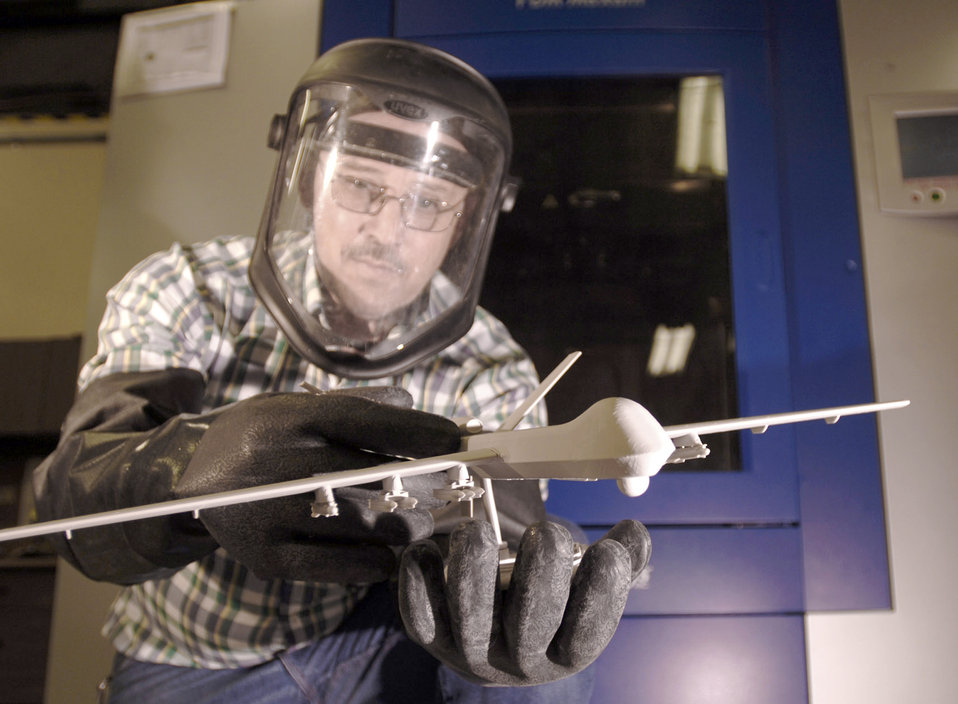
PECI

Bud Schmidt holds a model of an unmanned aerial vehicle created by the Fused Deposition Modeler at Sheppard Air Force Base, Texas, July 19, 2008. The FDM was used in conjunction with 3-D laser-scanning equipment purchased through the Productivity Enhancing Capital Investment program to increase the 982nd Maintenance Squadron's trainer production rates by 875 percent.